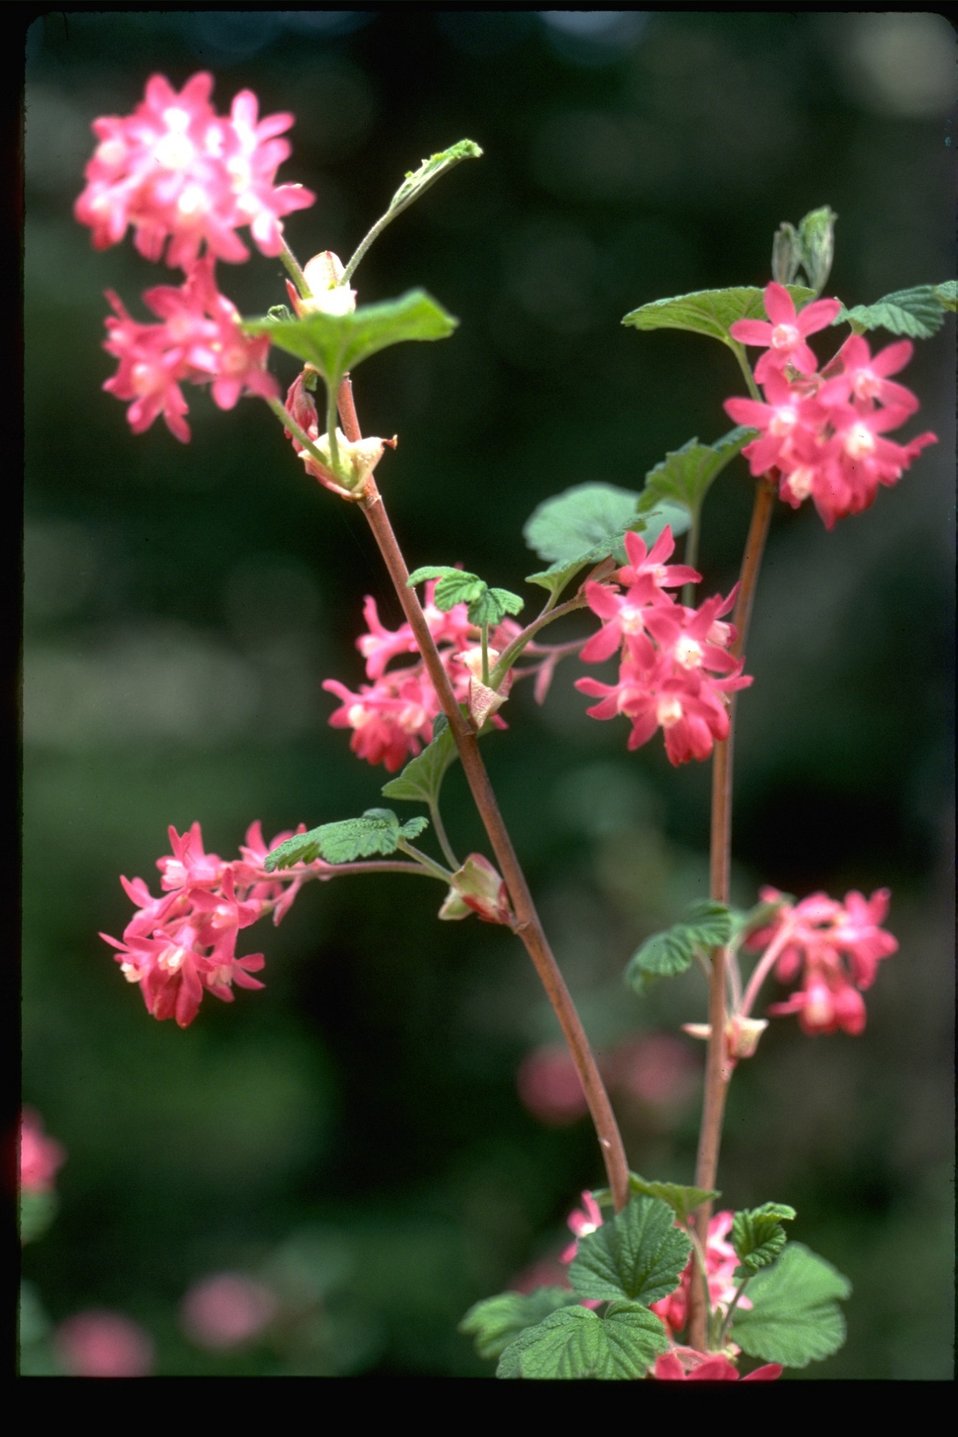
Ribes sanguineum